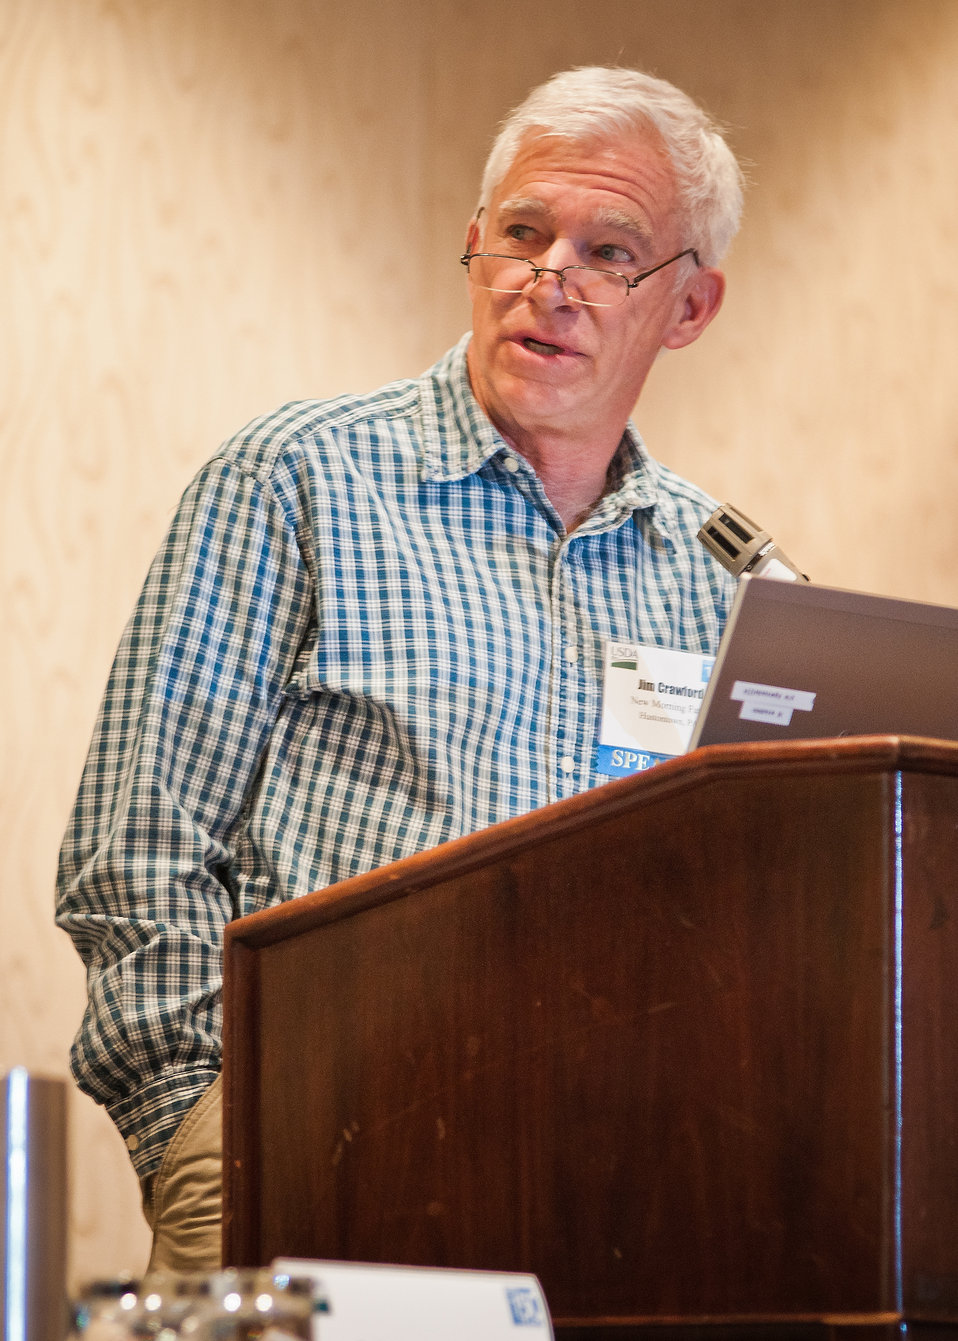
Jim Crawford, Tuscarora Organic Growers, Penn’s Corner Farm Alliance Hustontown, Pennsylvania spoke at the Making Locally Grown Food More Available afternoon breakout session at the 2012 Agricultural Outlook Forum, “Moving Agriculture Forward, Growing, Innovating and Celebrating 150 Years” held at the Crystal gateway Marriott Hotel Arlington, Virginia, Friday, February 24, 2012. The session explored what is driving demand for local foods, the challenges local food producers face trying to market their products and what is being done to facilitate local food marketing.